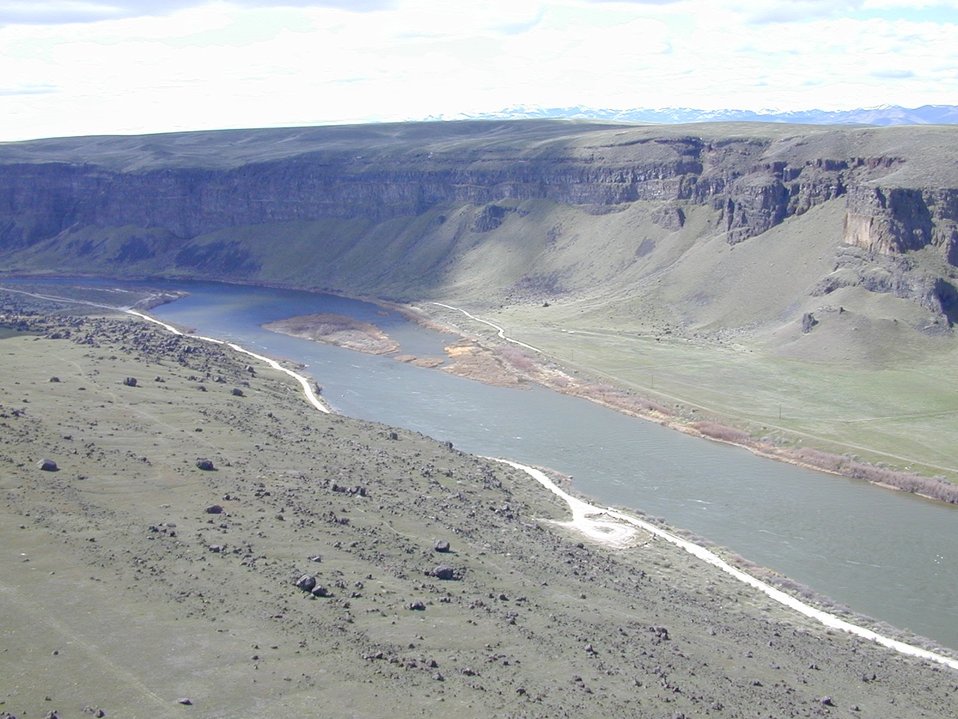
Snake River Birds of Prey National Conservation Area Lower Snake River District LSRD Snake River Canyon Scenic